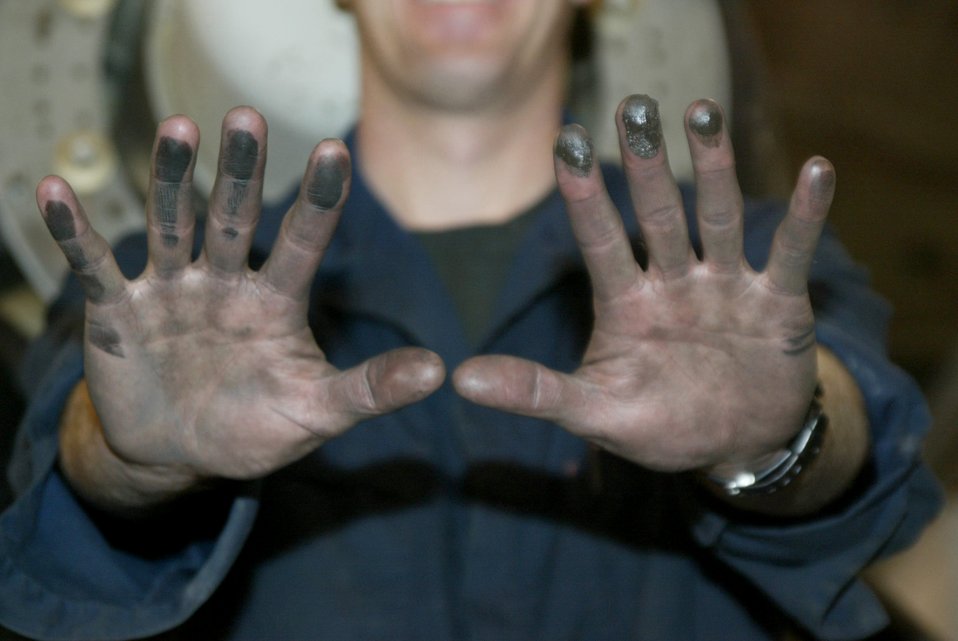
It's a dirty job, but...

POPE AIR FORCE BASE, N.C. (AFPN) -- Tech. Sgt. Jason Wise displays the dirt and grime accumulated after a hard day's work. Sergeant Wise works in the 43rd Maintenance Squadron propulsion flight where he inspects, repairs and rebuilds engines and propellers on C-130 Hercules.